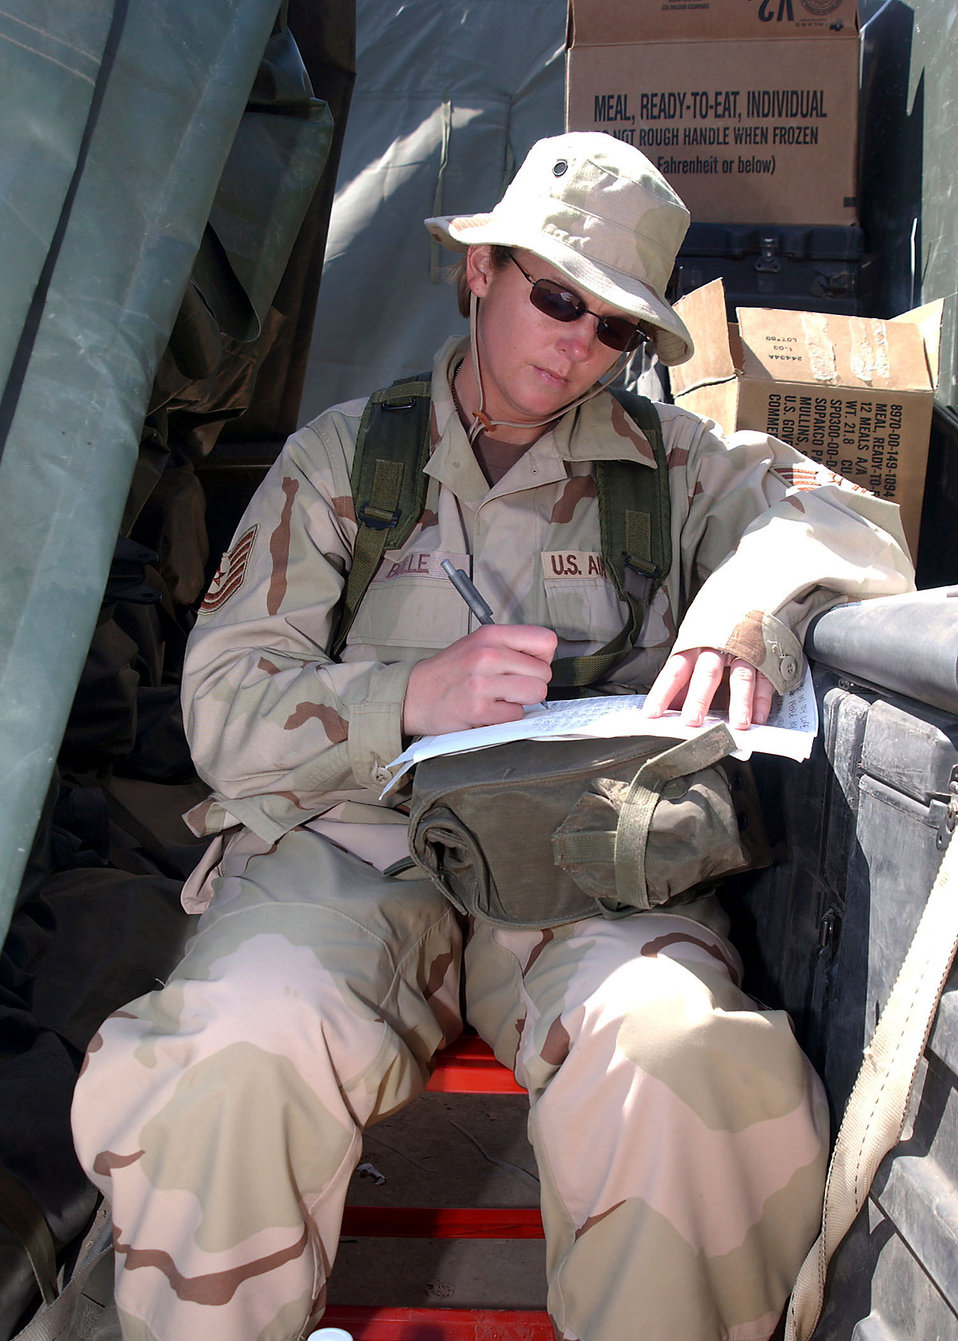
Dear family...

OPERATION IRAQI FREEDOM -- Tech. Sgt. Christine Bolle, 86th Expeditionary Contingency Response Group, fings a shady spot to write to family and friends April 2, 2003. Operation Iraqi Freedom is the multi-national coalition effort to liberate the Iraqi people, eliminate Iraqi's weapons of mass destruction and end the regime of Saddam Hussein.